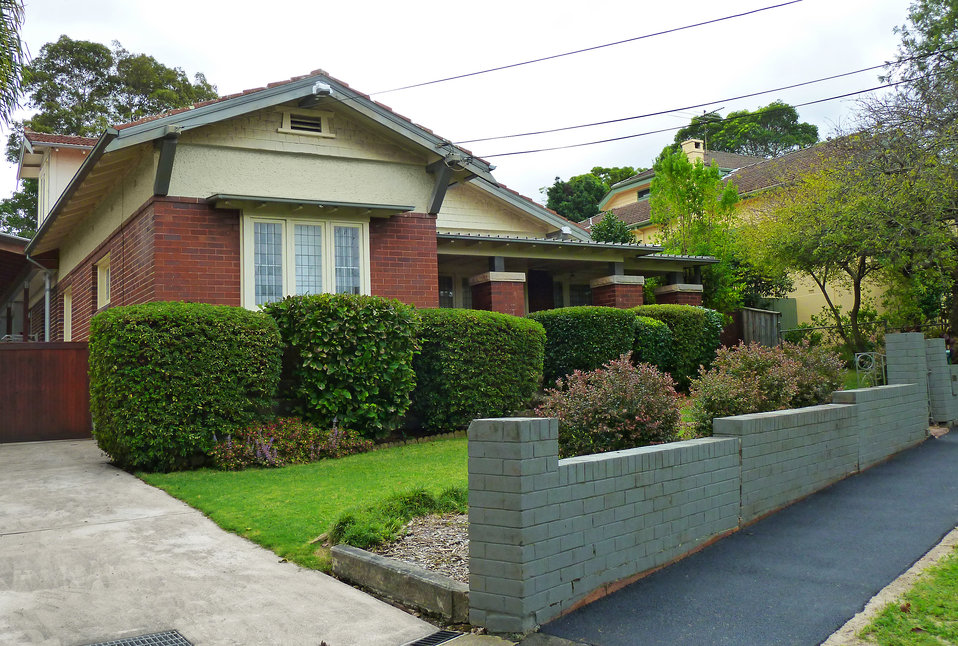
12 Woodside Avenue, Lindfield, New South Wales, Australia.